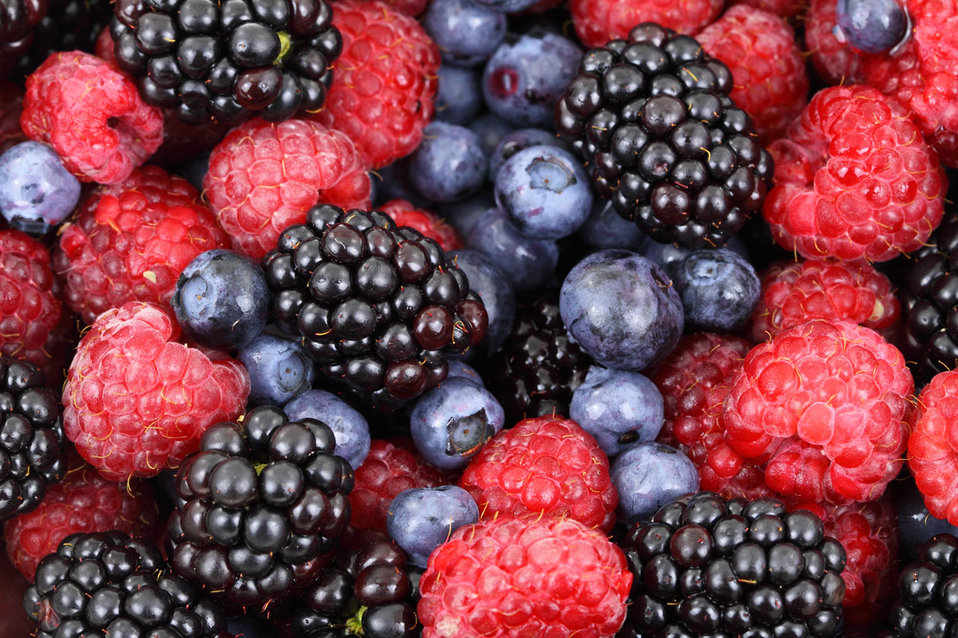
Forest fruit background.